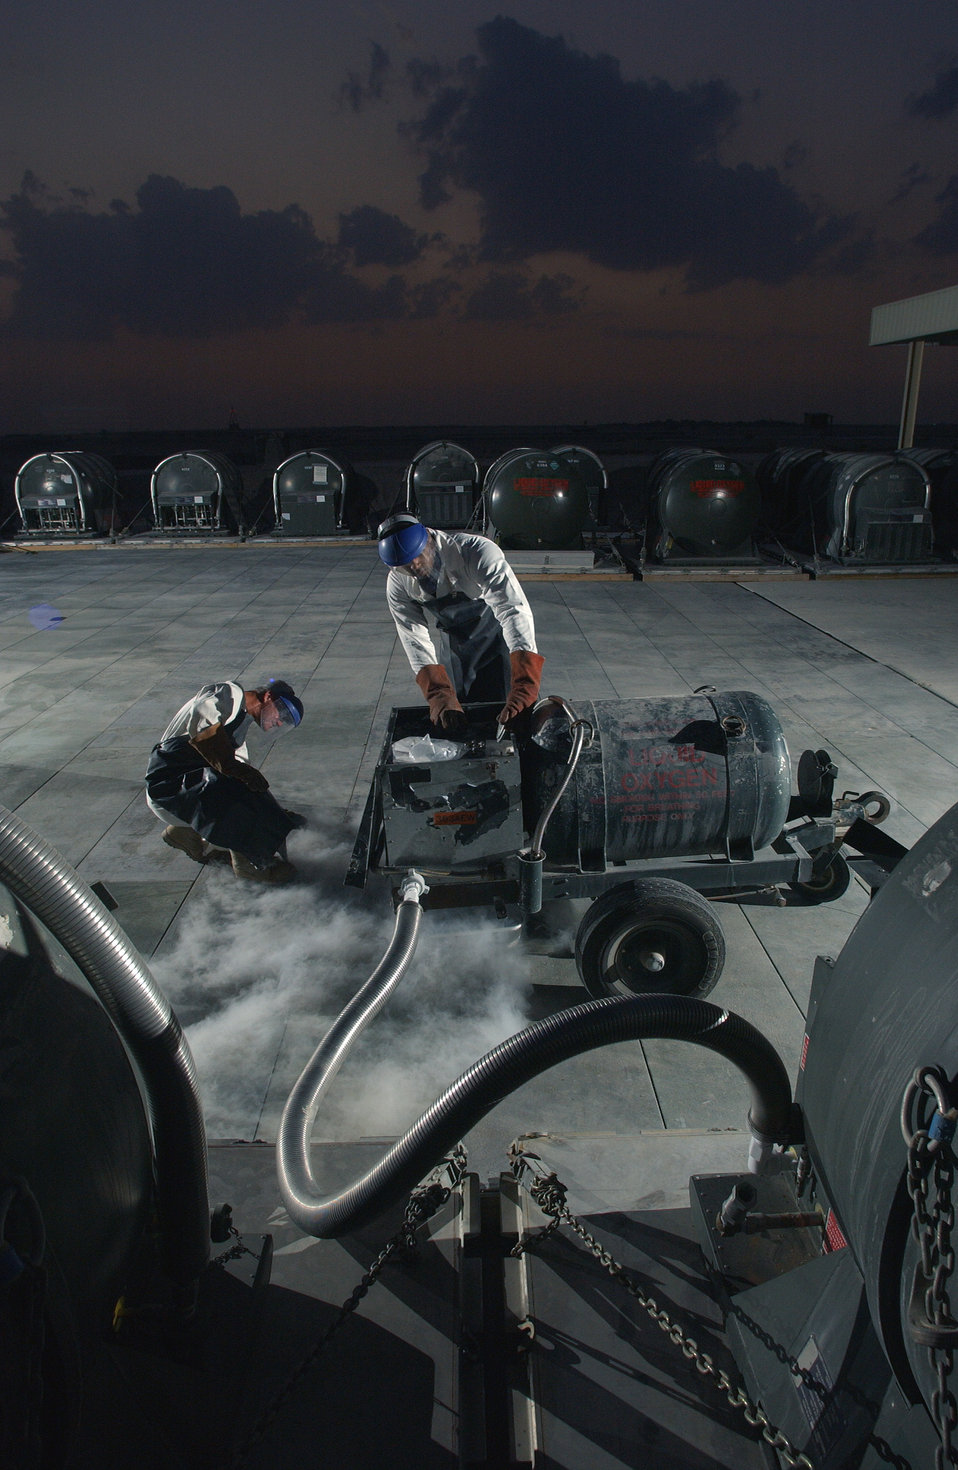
Breathing oxygen

SOUTHWEST ASIA -- Tech. Sgt. William McLeod (left) monitors the vented liquid oxygen, while Staff Sgt. Anthony Anderson monitors the gages of an oxygen servicing cart. Oxygen remains in a liquid form at temperatures below minus 297 degrees Fahrenheit. At ambient temperatures, the oxygen boils and releases air-breathable oxygen, which is normally used in pressurized aircraft. Both airmen are at a forward-deployed location. Anderson is from the 60th Logistics Readiness Squadron at Travis Air Force Base, Calif., and McLeod is from the 99th Supply Squadron at Nellis AFB, Nev.